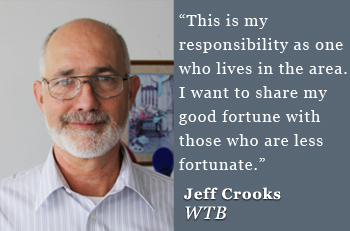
jeff-crooks